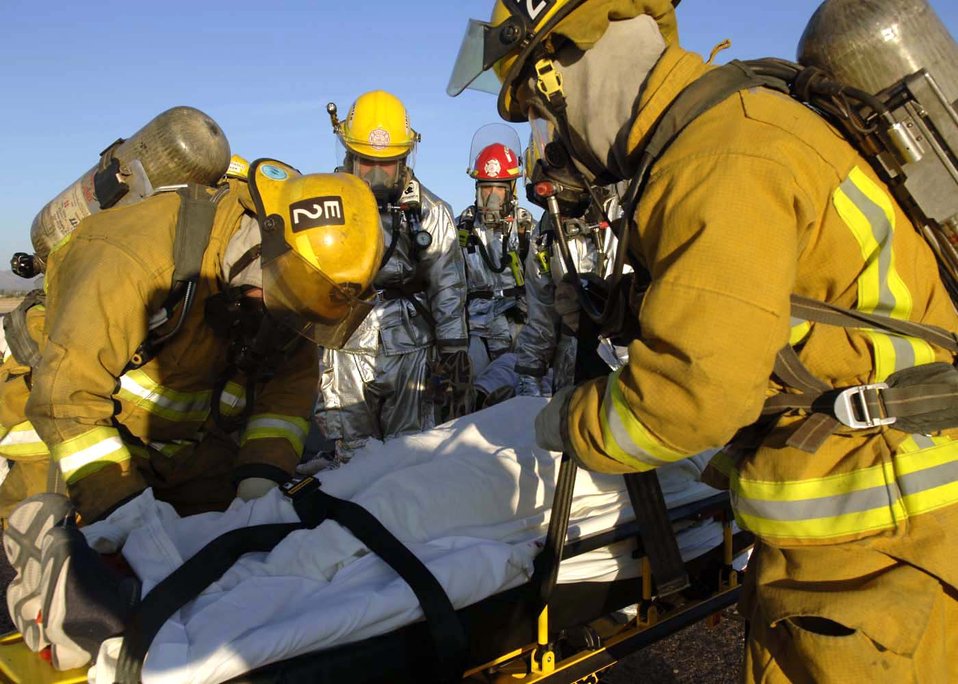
Training to fight fires together

Firefighters from Davis-Monthan Air Force Base and the Tucson Fire Department provide temporary treatment to survivors of a simulated aircraft accident prior to being transported to a local hospital Dec. 4 at Davis-Monthan AFB, Ariz. Exercise Vigilant Shield 07 is a joint Department of Defense and federal nuclear weapon accident exercise. The exercise scenario involved a C-17 Globemaster III carrying four nuclear weapons to be diverted to Davis-Monthan AFB due to simulated engine failure that caused an aircraft accident. Davis-Monthan firefighters, the Tucson Fire Department, Tucson Police Department, and many different agencies ranging form local to national levels responded to the simulated scene.